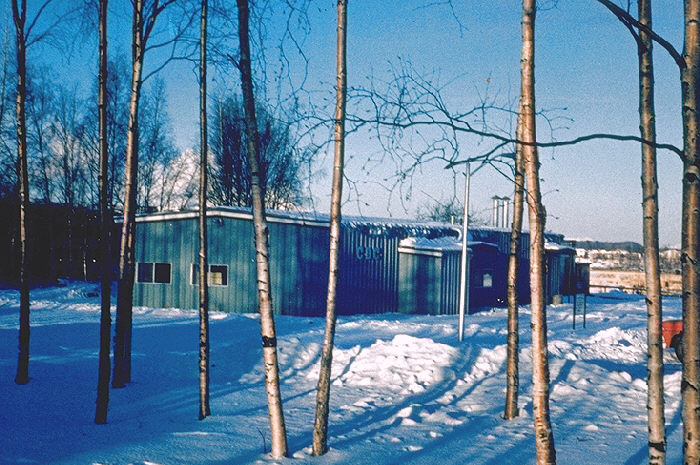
This was a view of the Centers for Disease Control and Prevention (CDC) Field Station, located in Anchorage, Alaska.